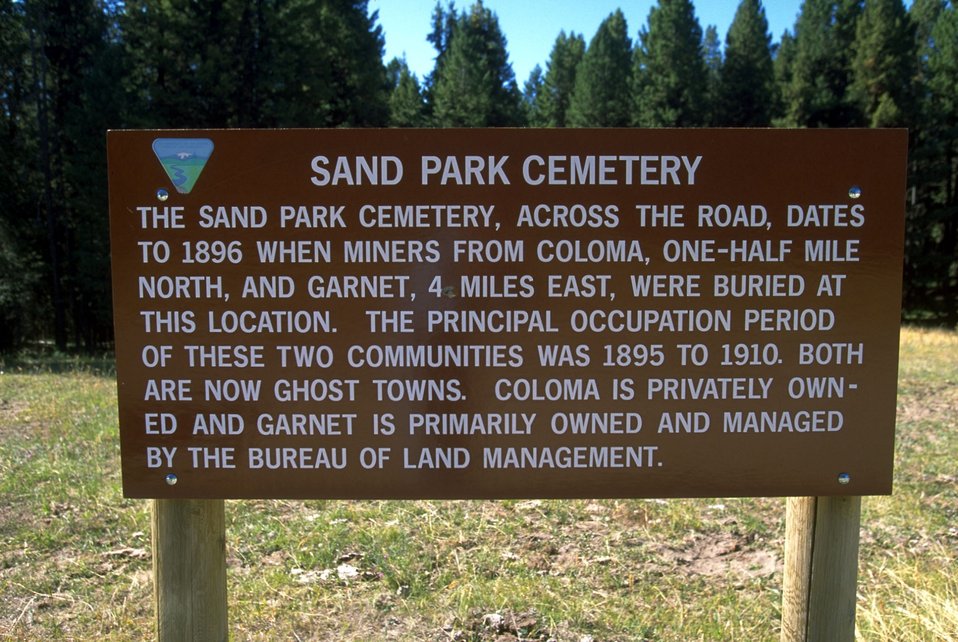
Interpretive sign at at Sand Park cemetary along Garnet Back Country Byway